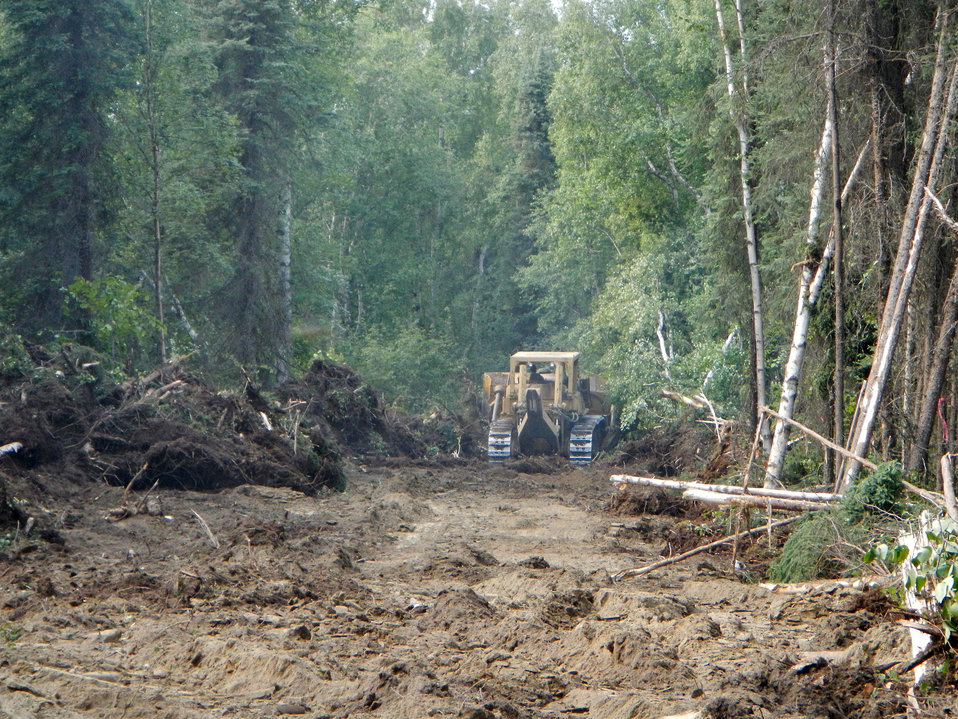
A dozer works the fire line at the Stewart Creek Fire. The Stewart Creek Fire located 25 miles east of North Pole, AK began on Jun. 19, 2013 due to human causes and has consumed an estimated 85, 475 acres. The fire is approximately 57% contained.